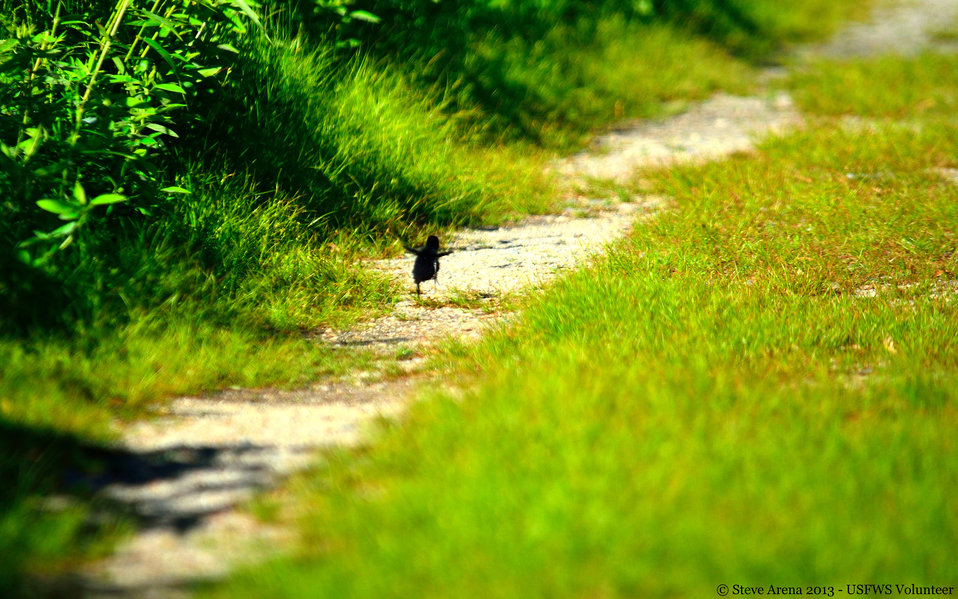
Virginia Rail (Rallus limicola) - newborn chick - running/hopping along

Great Meadows National Wildlife Refuge, Concord, MA

Credit: Steve Arena/USFWS

09 June 2013